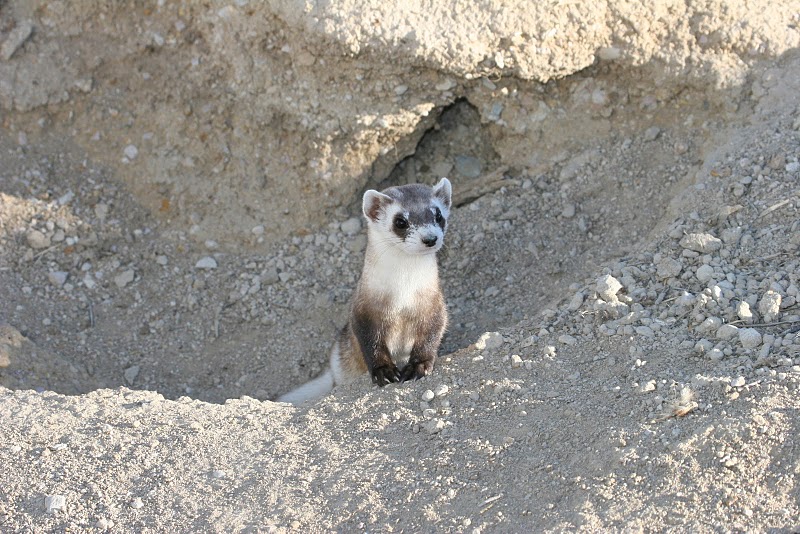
Black-footed Ferret